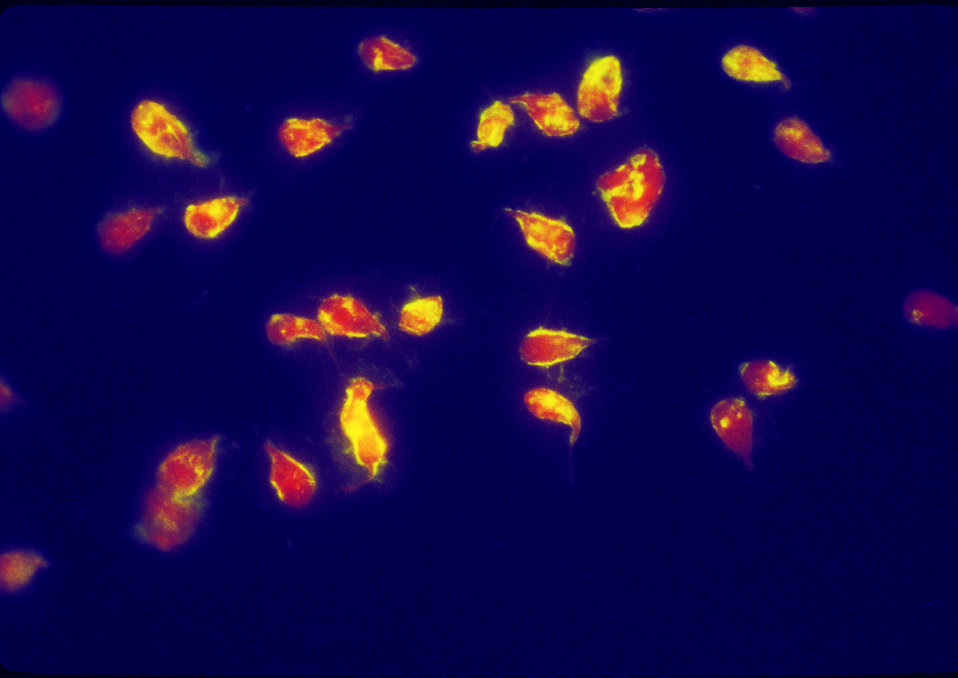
A photomicrograph of a positive indirect immunofluorescence test checking for the presence of Giardia lamblia.